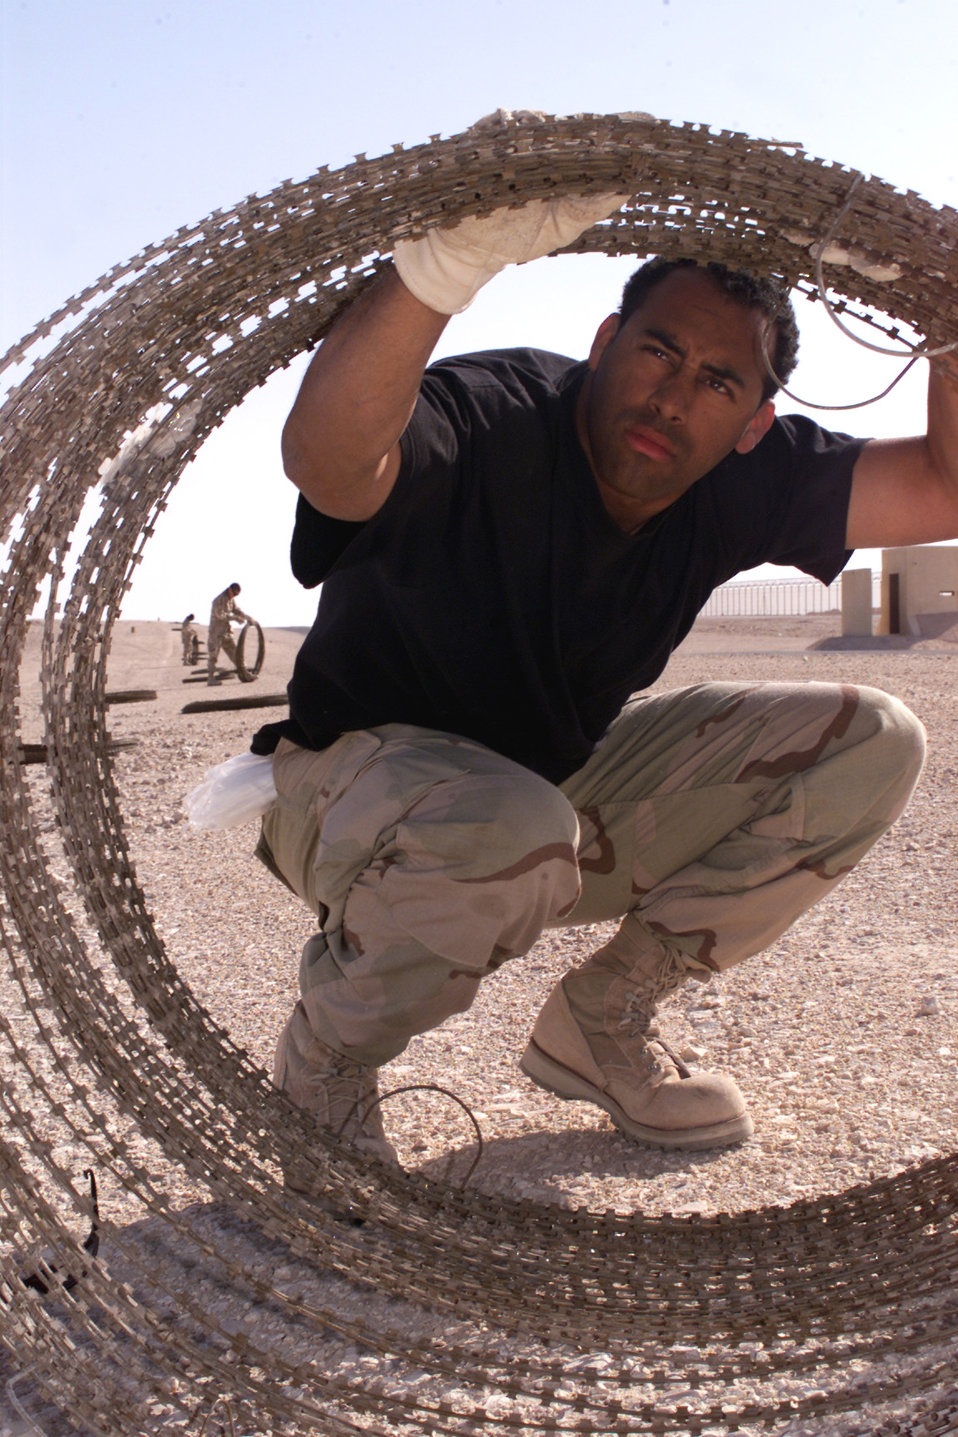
Wired for safety

OPERATION ENDURING FREEDOM -- Airmen 1st Class Gregory Sims uncoils concertina wire to secure parts of Al Udeid Air Base, Qatar. Sims is part of 379th Expeditionary Maintenance Squadron’s munitions flight supporting Operation Enduring Freedom.